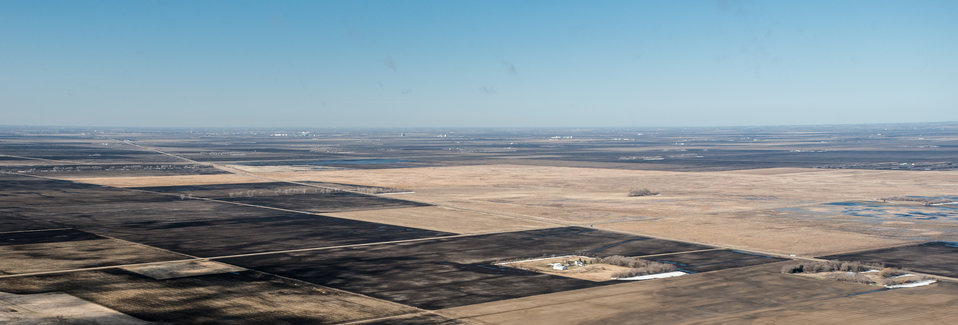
Local land owners will enjoy the wildlife that will be attracted to this area as the Ehlert U.S. Department of Agriculture (USDA) Natural Resources Conservation Service (NRCS) Wetland Reserve Program (WRP) in Wilkin County matures, in Minnesota, on Tuesday, April 30, 2013. For information about this and other programs from the USDA Red River Basin Initiative (RRBI) please see www.mn.nrcs.usda.gov/news/features13/RRBI.html.